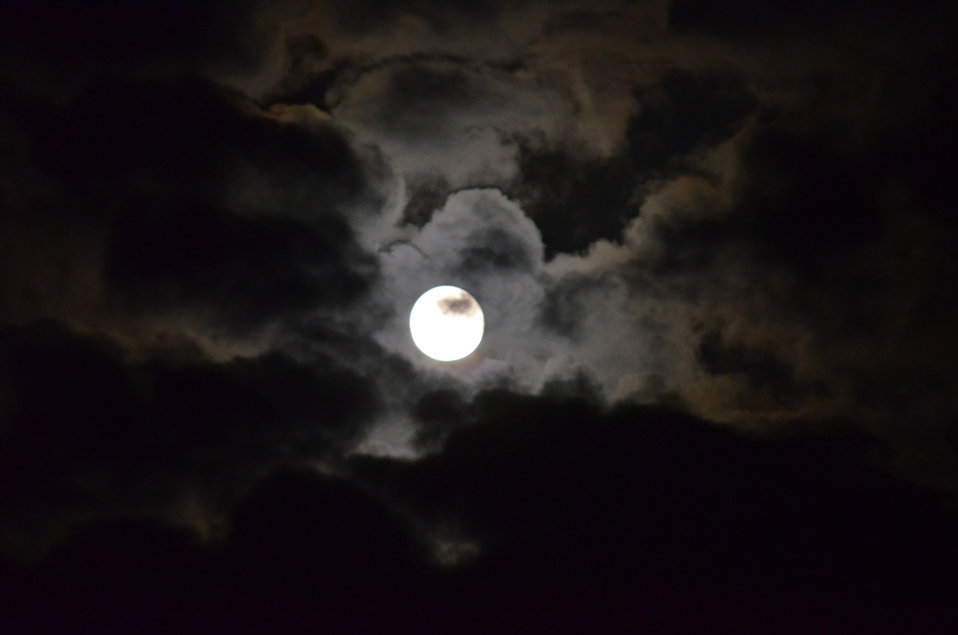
Full moon from the banks of the Missouri River.